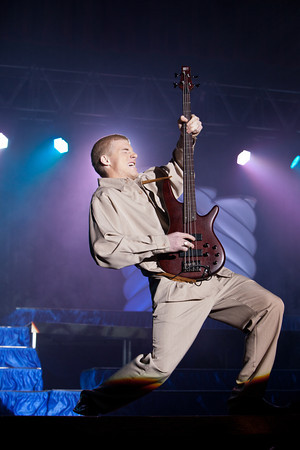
Monster performance

Senior Airman Kyle Willis rocks the bass to